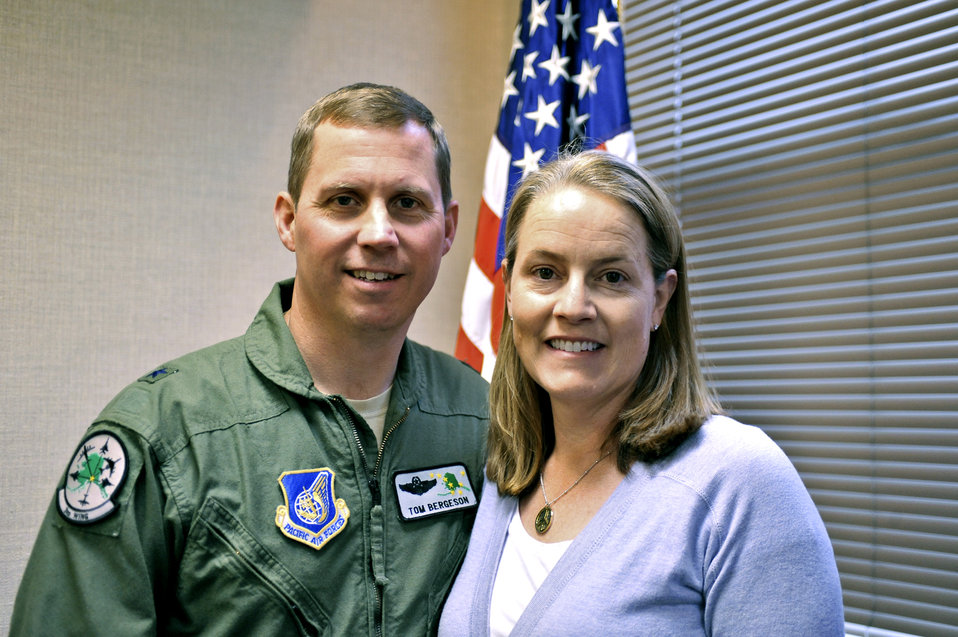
Wing commander, spouse team humbled by recognition

Brig. Gen. Thomas Bergeson and his wife, Lt. Col. Pam Bergeson, are the 2010 winners of the General and Mrs. Jerome F. O'Malley Award, which recognizes the best wing commander and spouse team whose contributions to the nation, Air Force and local community best exemplify the highest ideals and positive leadership of a military couple serving in a key Air Force position. General Bergeson is the 3rd Wing commander at Joint Base Elmendorf-Richardson, Alaska. Colonel Bergeson is the inspector general for the 477th Fighter Group stationed at JB Elmendorf.